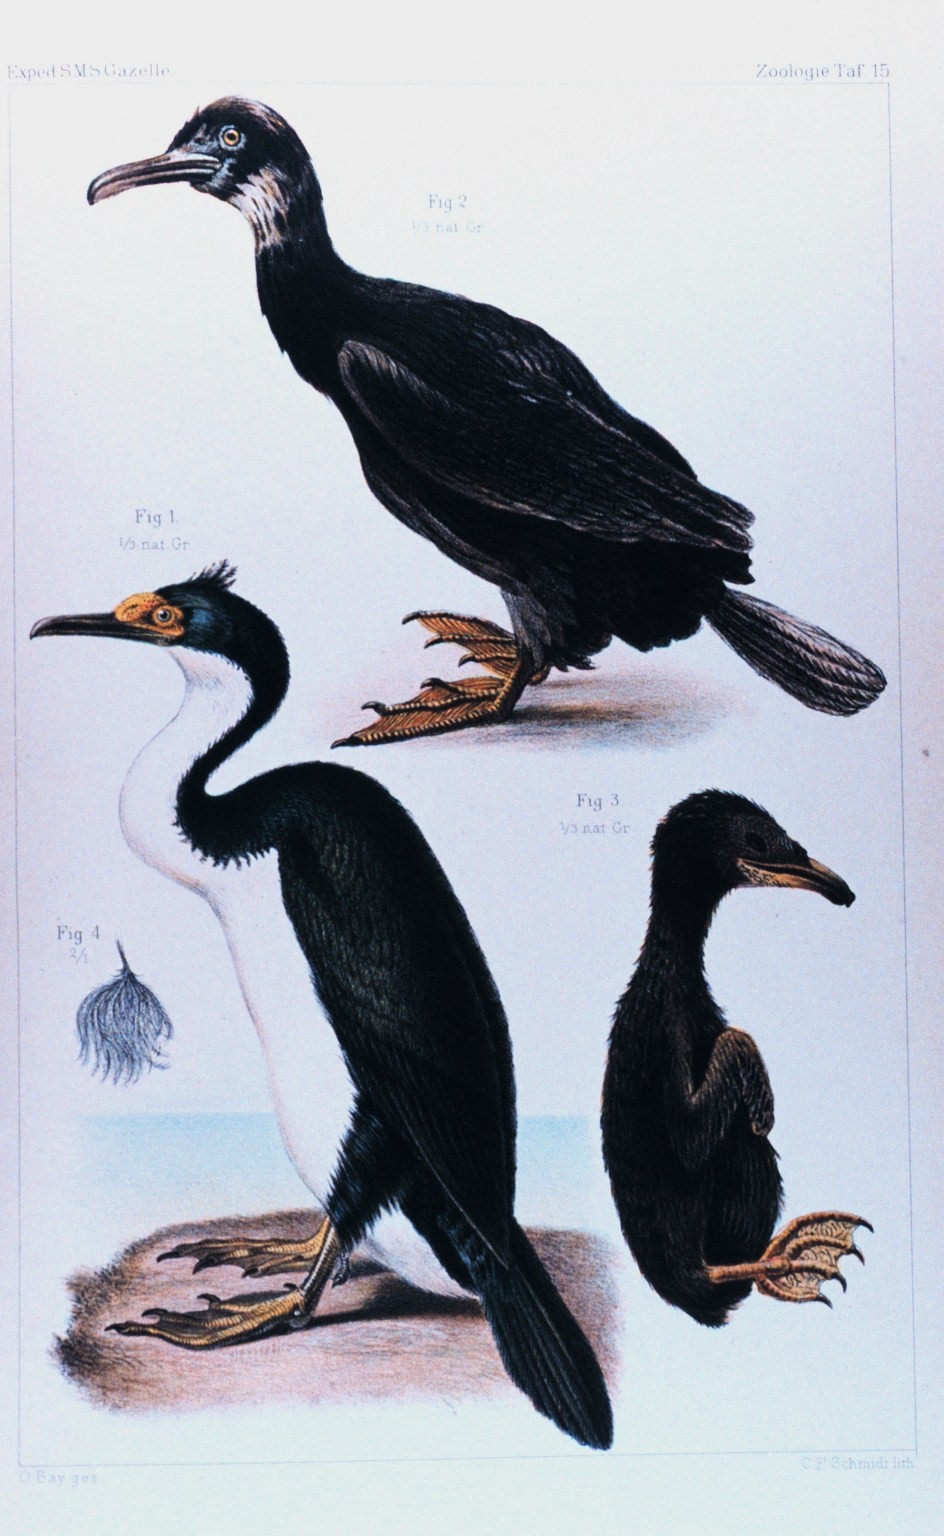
Phalacrocorax verrucosus -- a type of cormorant. In: 'Die Forschungsreise S. M. S. 'Gazelle' in den Jahren 1874 bis 1876.' P. 322. Plate 9. Library Call Number C/L G373 H.